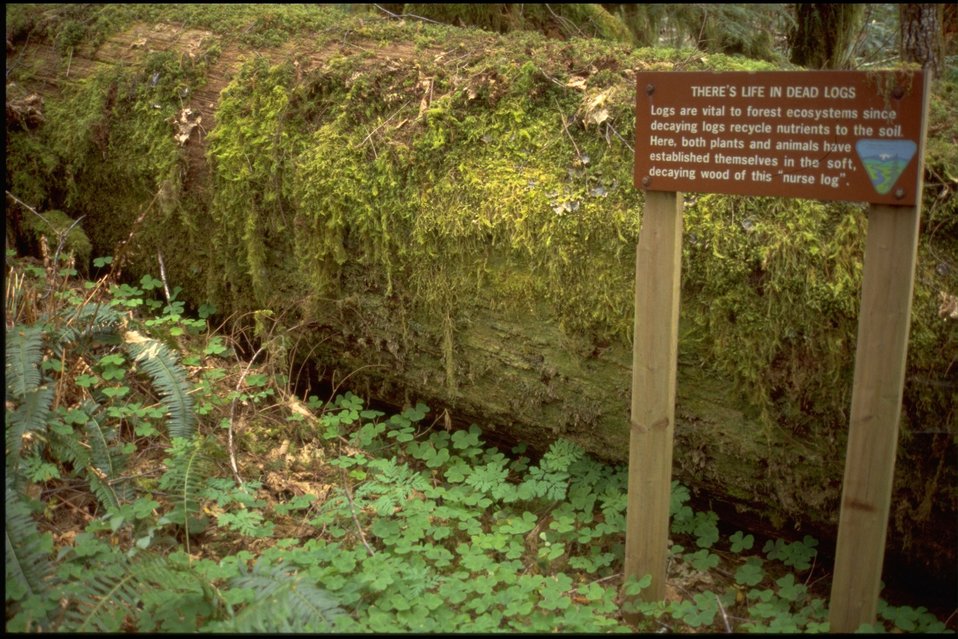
Old growth trail.